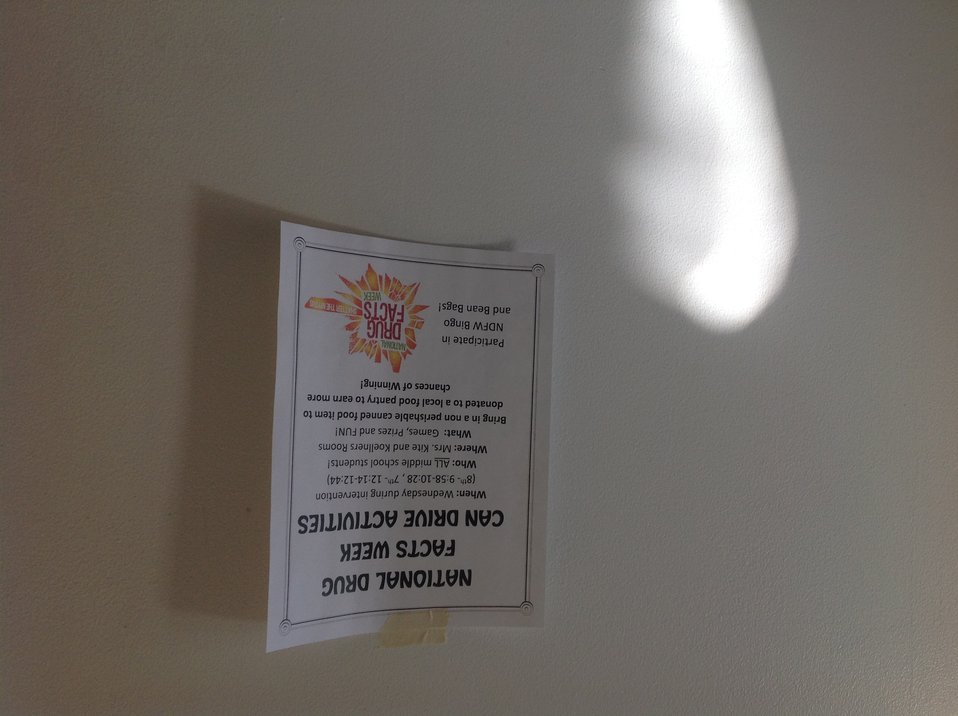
Getting the Word Out

Teenagers from the Van Buren County SAFE Coalition's, Youth Leadership Council (YLC) in Keosauqua, Iowa participate in various events during National Drug Facts Week, 2014.